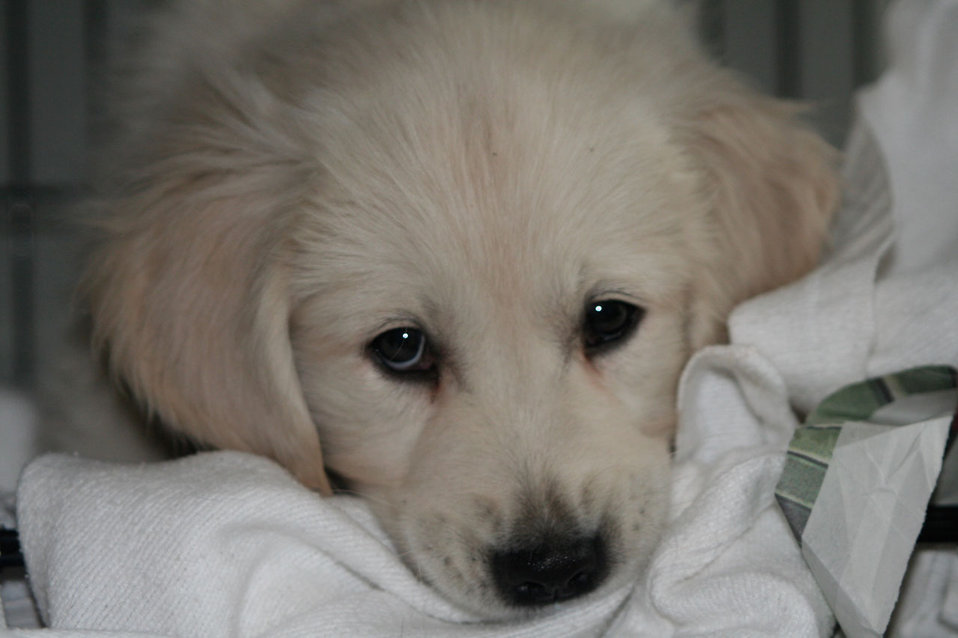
Unbearably cute puppy

Title says it all.